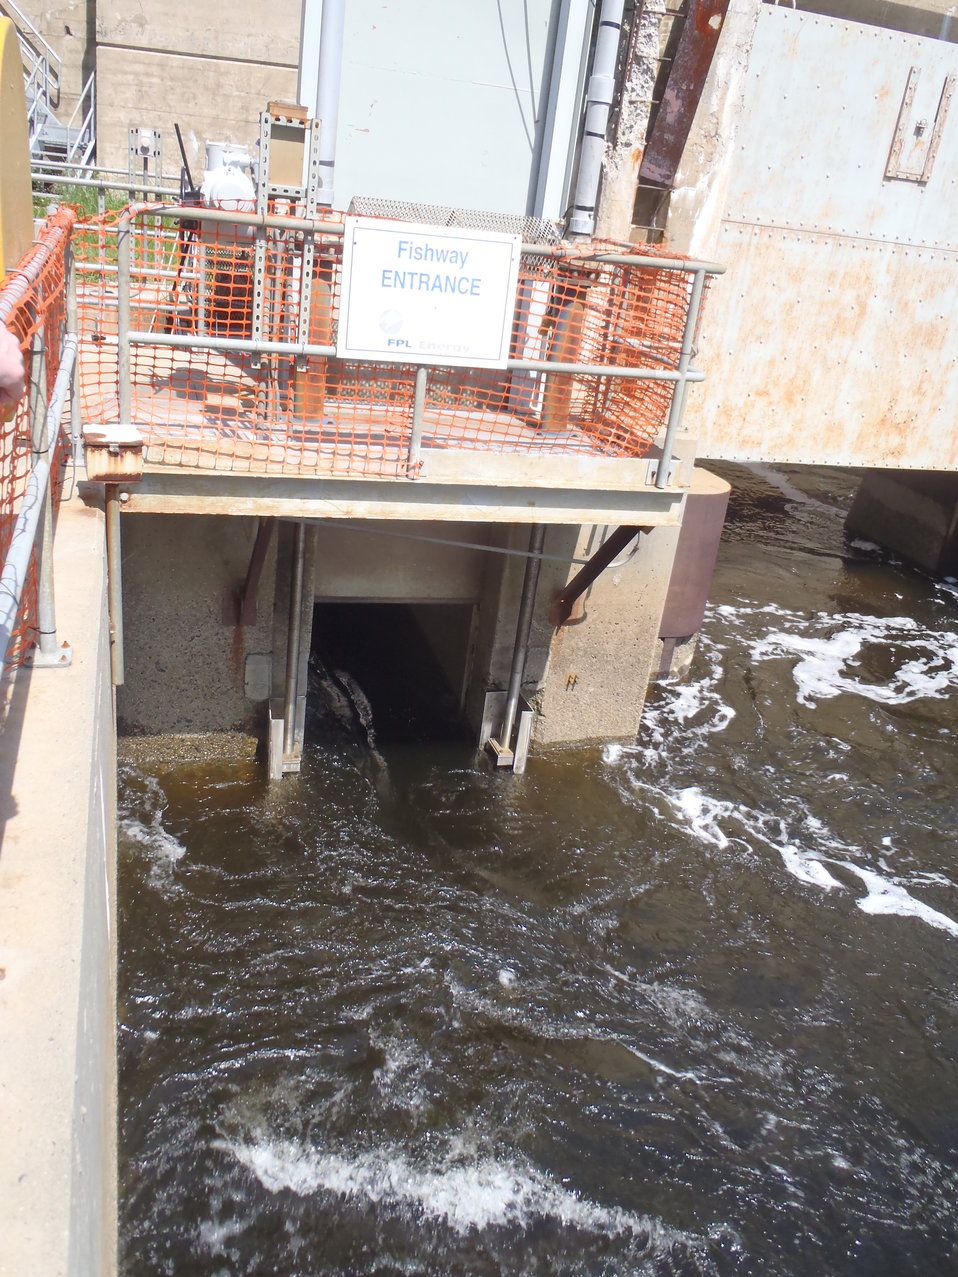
Fish lift entrance on the Saco River